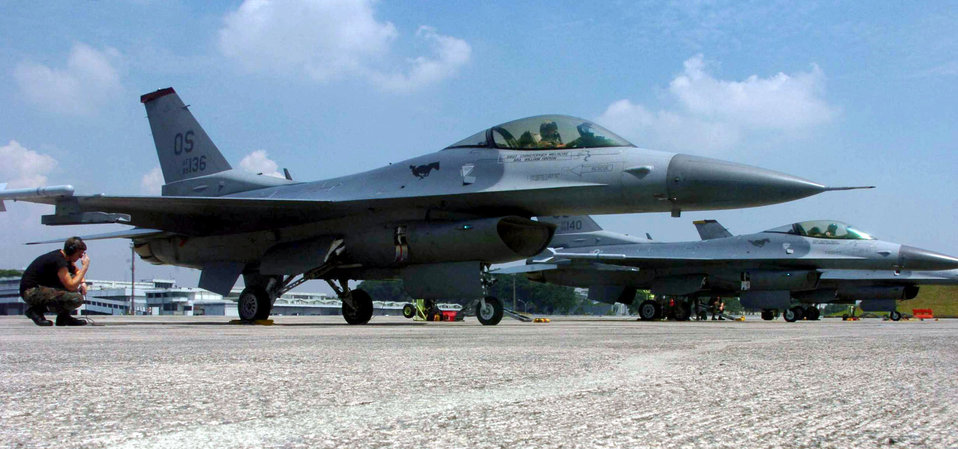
Commando maintainers

PAYA LABAR AIR BASE, Singapore -- F-16 Fighting Falcon crew chiefs from the 36th Maintenance Squadron at Osan Air Base, South Korea, prepare to launch jets during Commando Sling 04-3 here. U.S. and Singaporean Airmen trained together using realistic dissimilar aircraft air-to-air combat tactics.